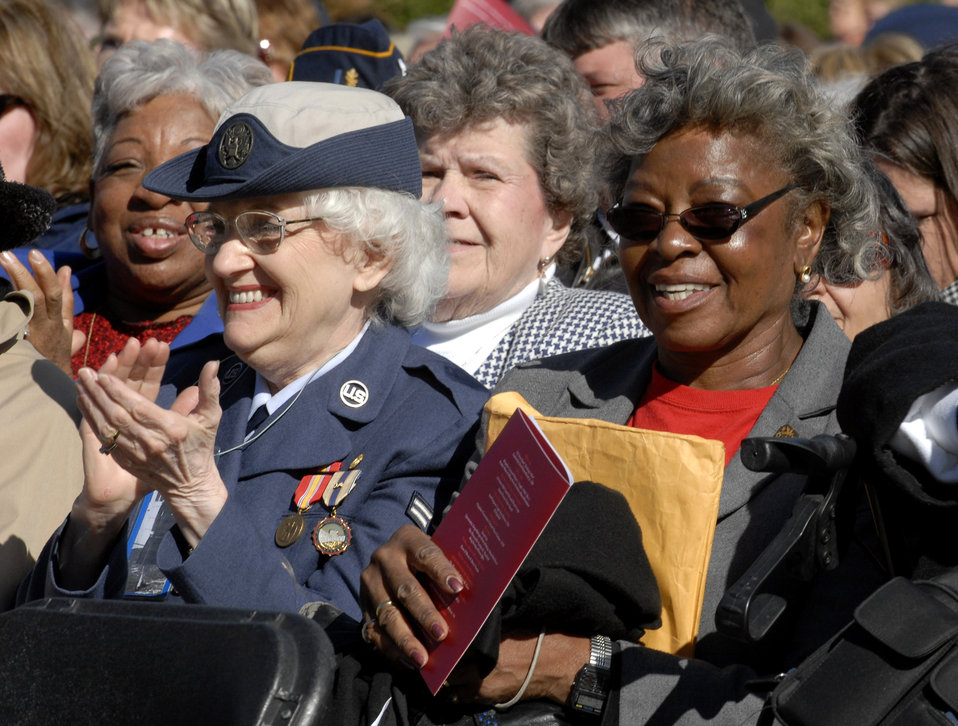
10th anniversary of WIMSA

Women veterans applaud Secretary of Defense Robert M. Gates as he delivers the keynote address Nov. 3 during the ceremony celebrating the 10th anniversary of the Women in Military Service for America Memorial at Arlington National Cemetery.